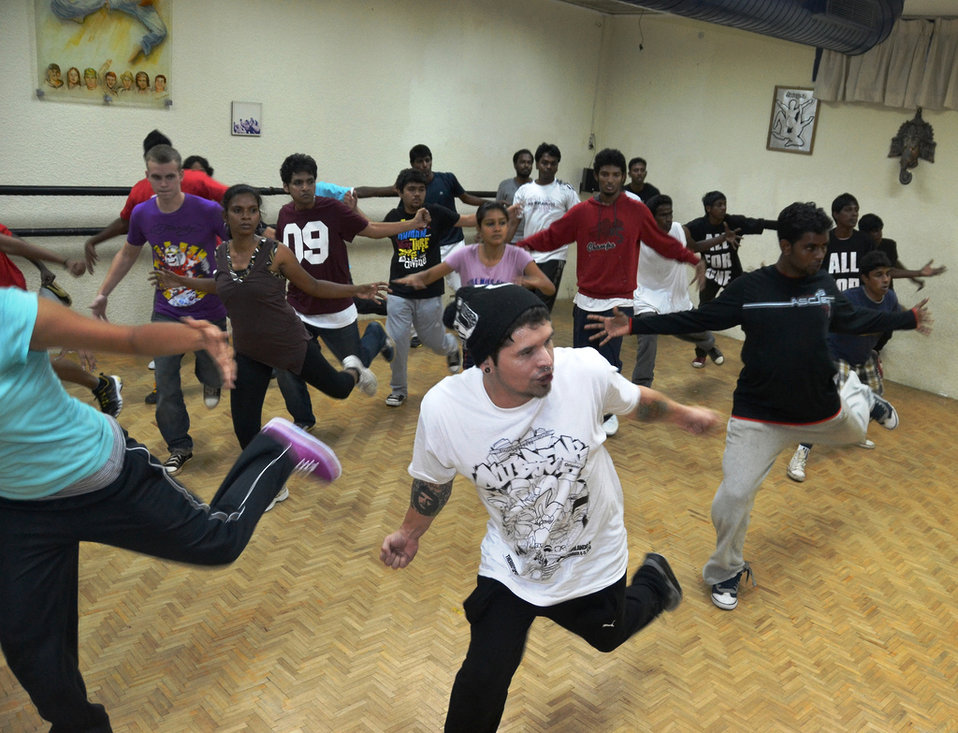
HaviKoro Hosts a Workshop

HaviKoro, an American breakdancing group, hosts a workshop in Chandigarh, India, on January 19, celebrating the sixth anniversary of the American Corner in Chandigarh.